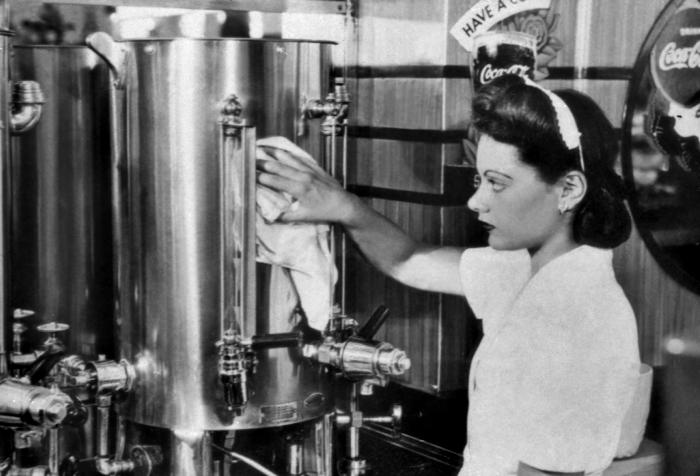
This historic 1950s photograph depicted a worker cleaning a stainless steel beverage dispenser that was located in the food preparation area of an unspecified restaurant. This was one of a series of instructional images used by the Minnesota Board of Health used to train the state's public health workers. The purpose of these images and the requisite training was focused on protecting food supplies from bacterial contamination.